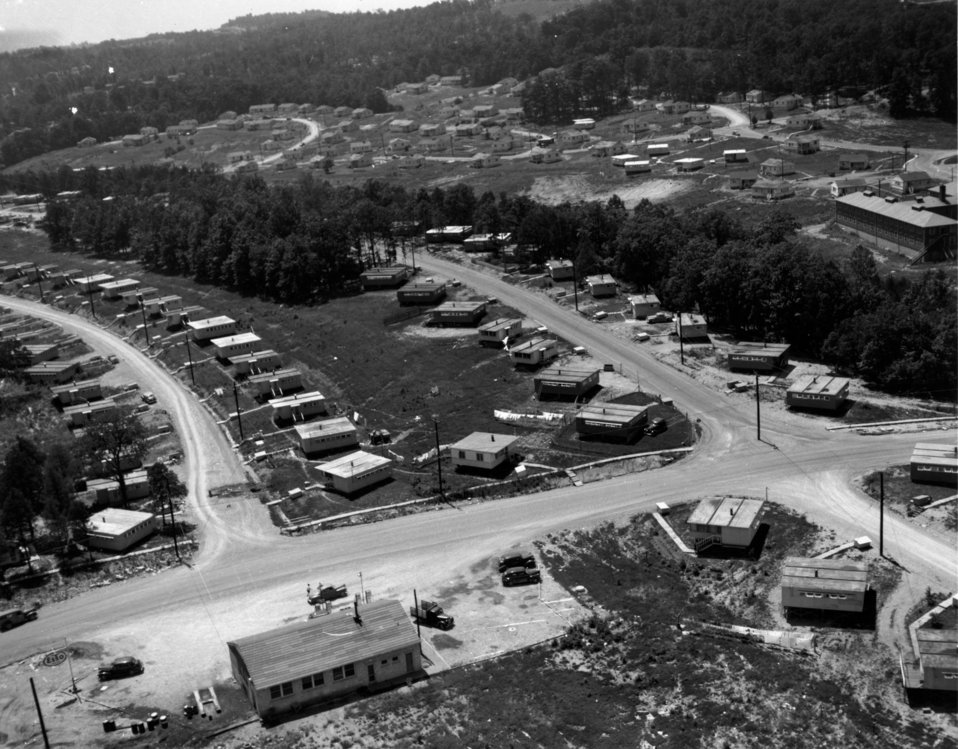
Aerial of Oak Ridge